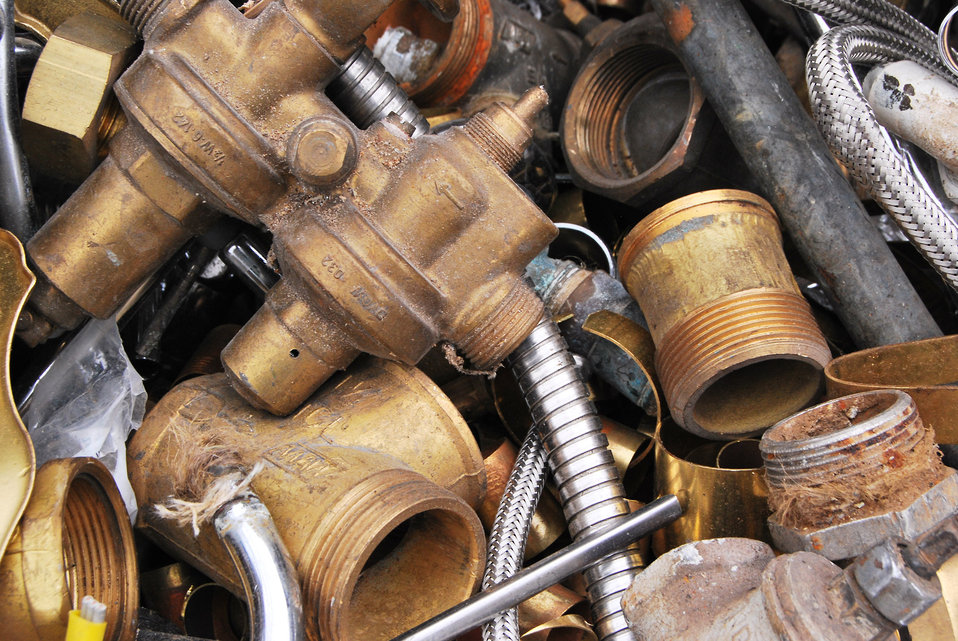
Remains of the company i

Scrap and old metal.